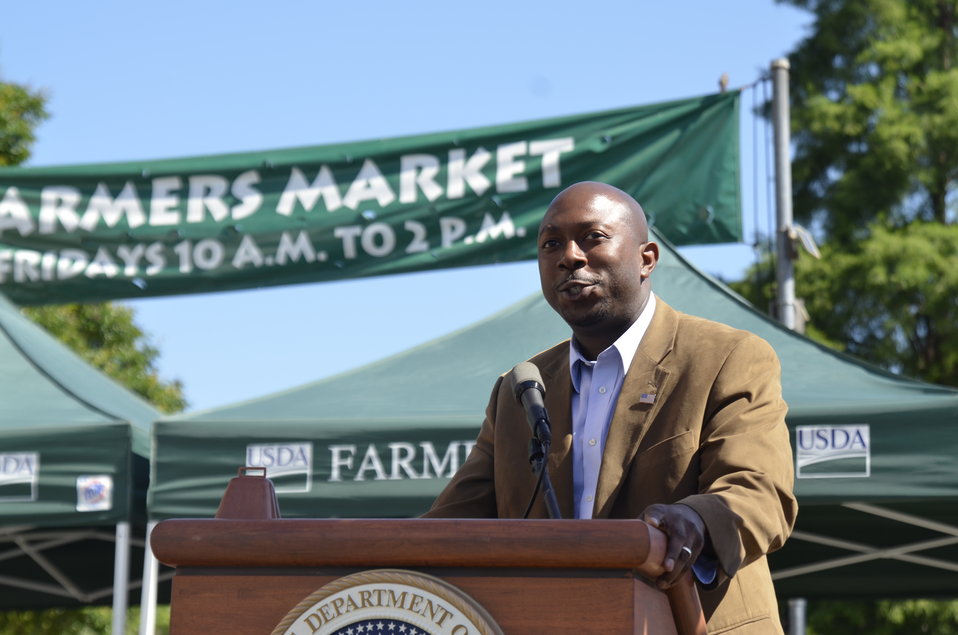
U.S. Department of Agriculture (USDA) Farm and Foreign Agricultural Service (FAS) Deputy Under Secretary Karis T. Gutter speaks at the opening of USDA’s 2014 Farmers Market in the east parking lot of USDA in Washington, D.C. on Friday, Jun. 6, 2014.